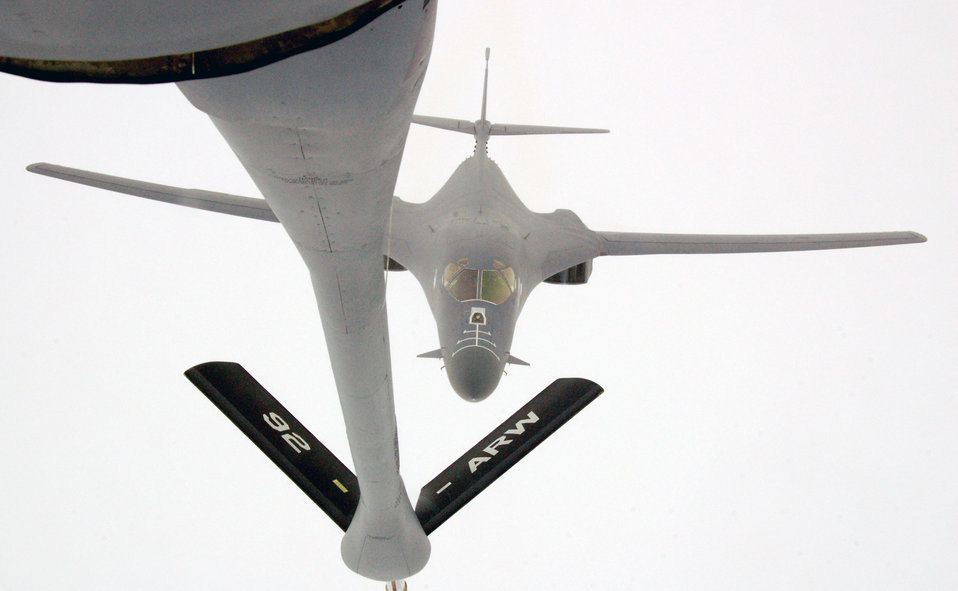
Reufelers keep mission going Christmas Day over Afghanistan

A B-1B Lancer approaches the boom of a KC-135 Stratotanker Christmas Day for refueling. The bomber received 39,000 pounds of fuel to continue its mission over the Afghanistan area of responsibility. The KC-135 is assigned to the 22nd Expeditionary Air Refueling Squadron at Manas Air Base, Kyrgyzstan.